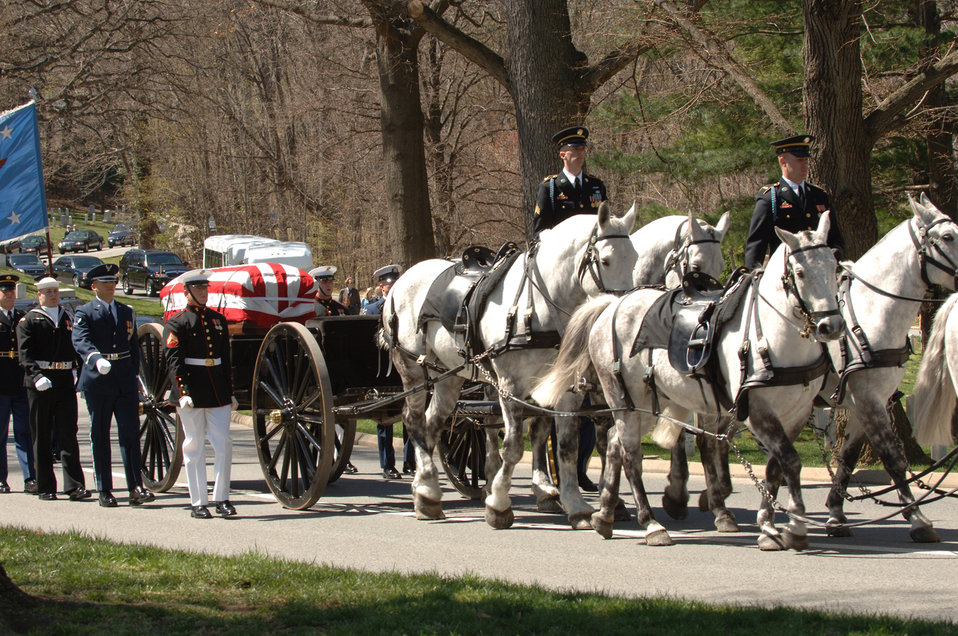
Weinberger tribute

The casket containing former Secretary of Defense Caspar Weinberger arrives at the gravesite in Arlington National Cemetery, Arlington, Va., April 4, 2006. Secetary Donald H. Rumsfeld delivered remarks during the memorial service.